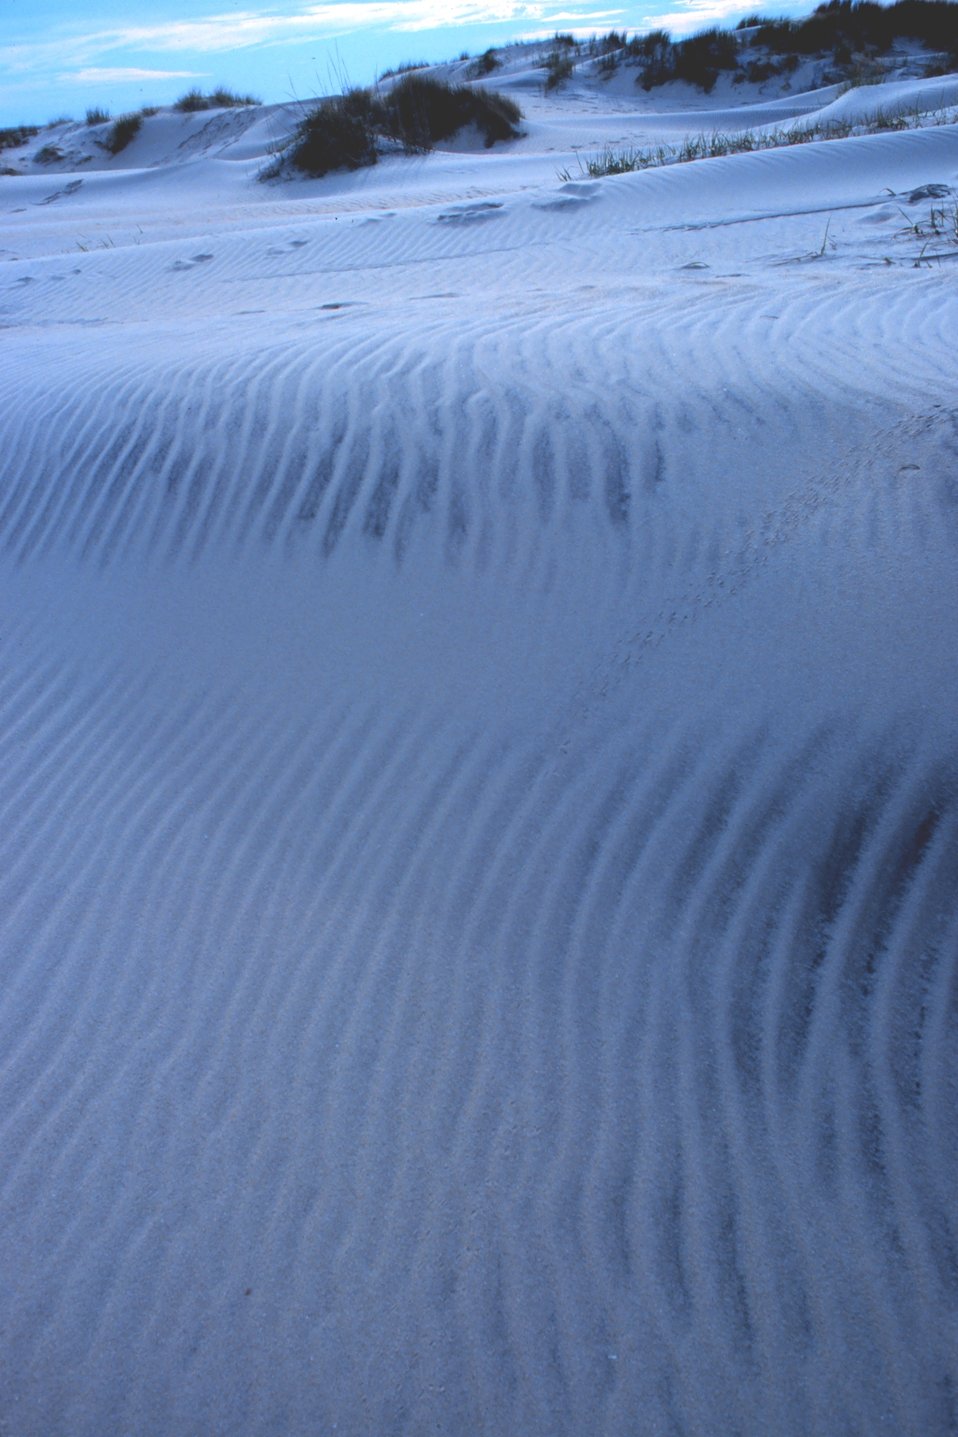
Wind-swept dunes near the abandoned Coast Guard Station